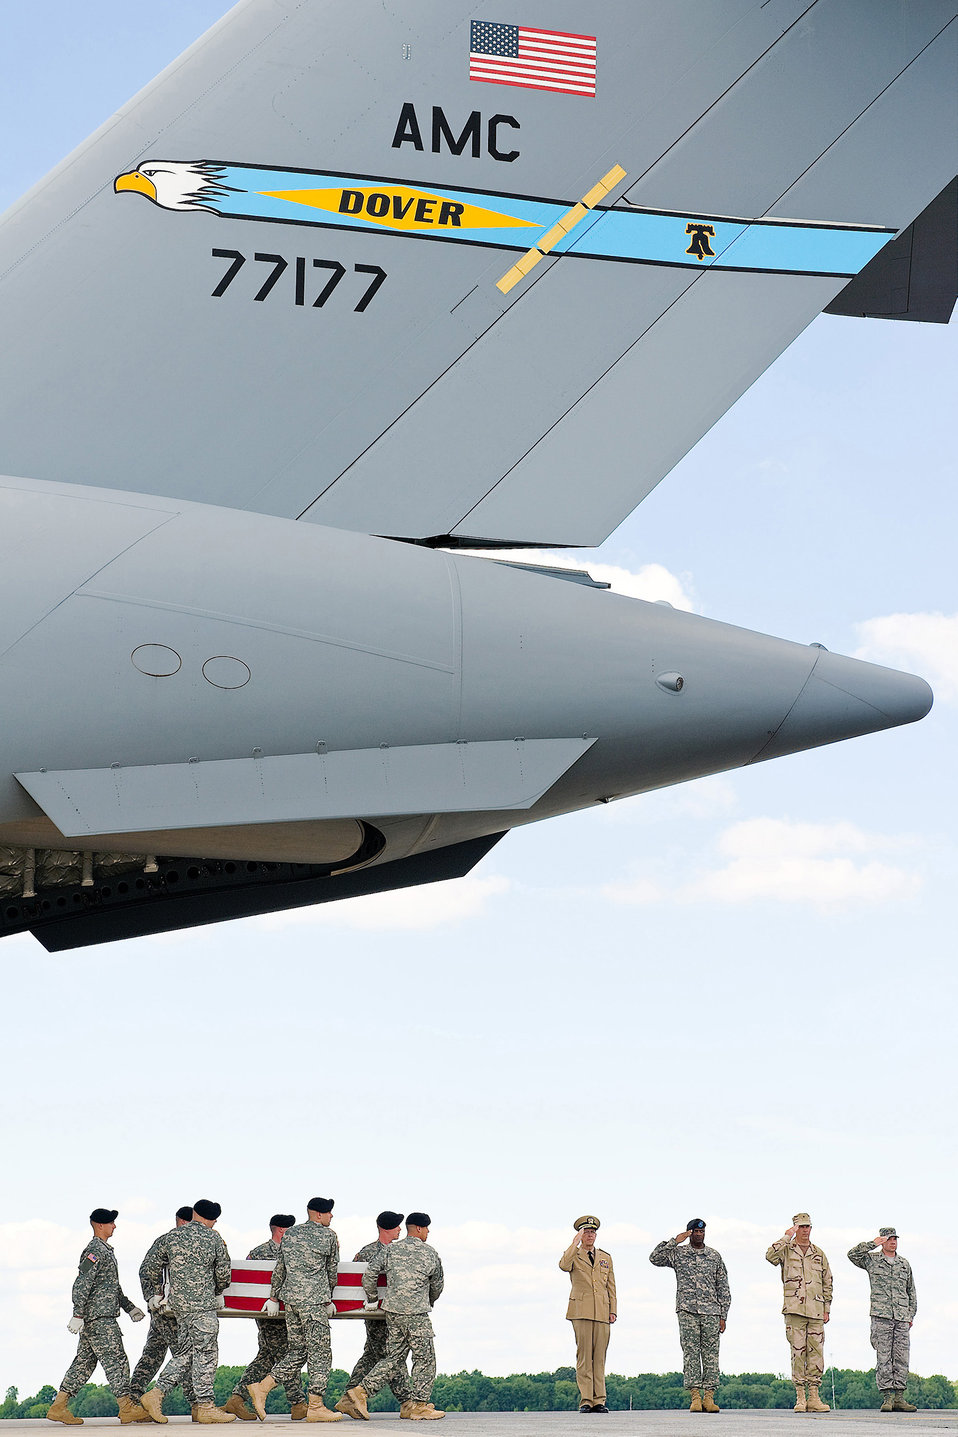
Remains of 7 troops killed in Afghanistan return home

Navy Adm. Mike Mullen, Navy Rear Adm. James J. Shannon, Army Brig. Gen. Michael T. Harrison Sr. and Col. Manson Morris pay their respects as an Army carry team transfers the remains of Capt. Mark A. Garner July 8 at Dover Air Force Base, Del. Admiral Mullen is the chairman of the Joint Chiefs of Staff, and Admiral Shannon is the commander of the Naval Warfare Center. General Harrison is the director of Joint and Futures in the Office of the Deputy Chief of Staff, G8, Headquarters, Department of the Army. Colonel Morris is the 436th Airlift Wing commander.